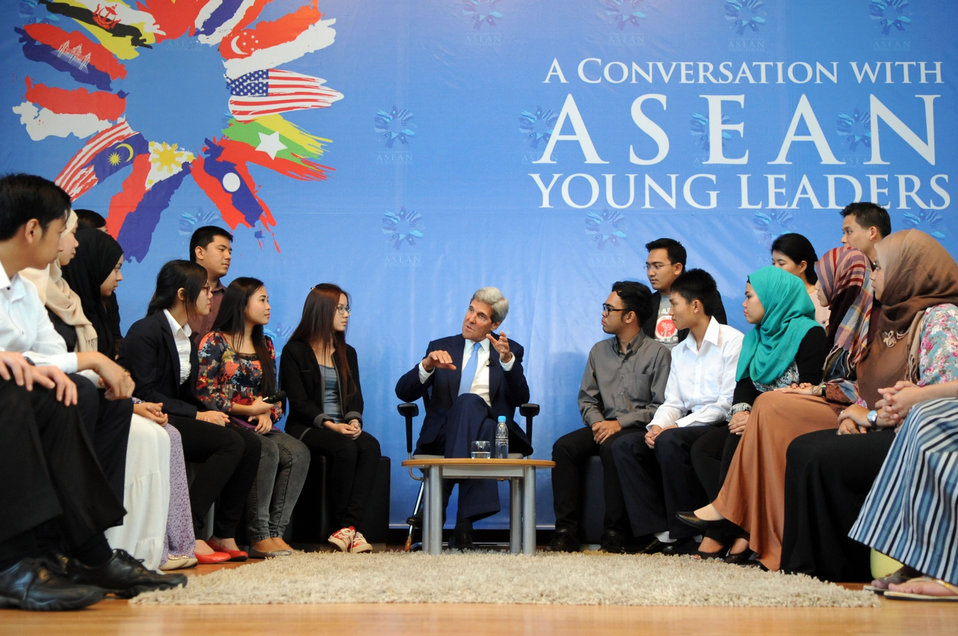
Secretary Kerry Speaks to Students

U.S. Secretary of State John Kerry speaks to students during a Youth Leaders meeting in Bandar Seri Begawan, Brunei, before the U.S.-ASEAN Summit meeting begins on on October 9, 2013.